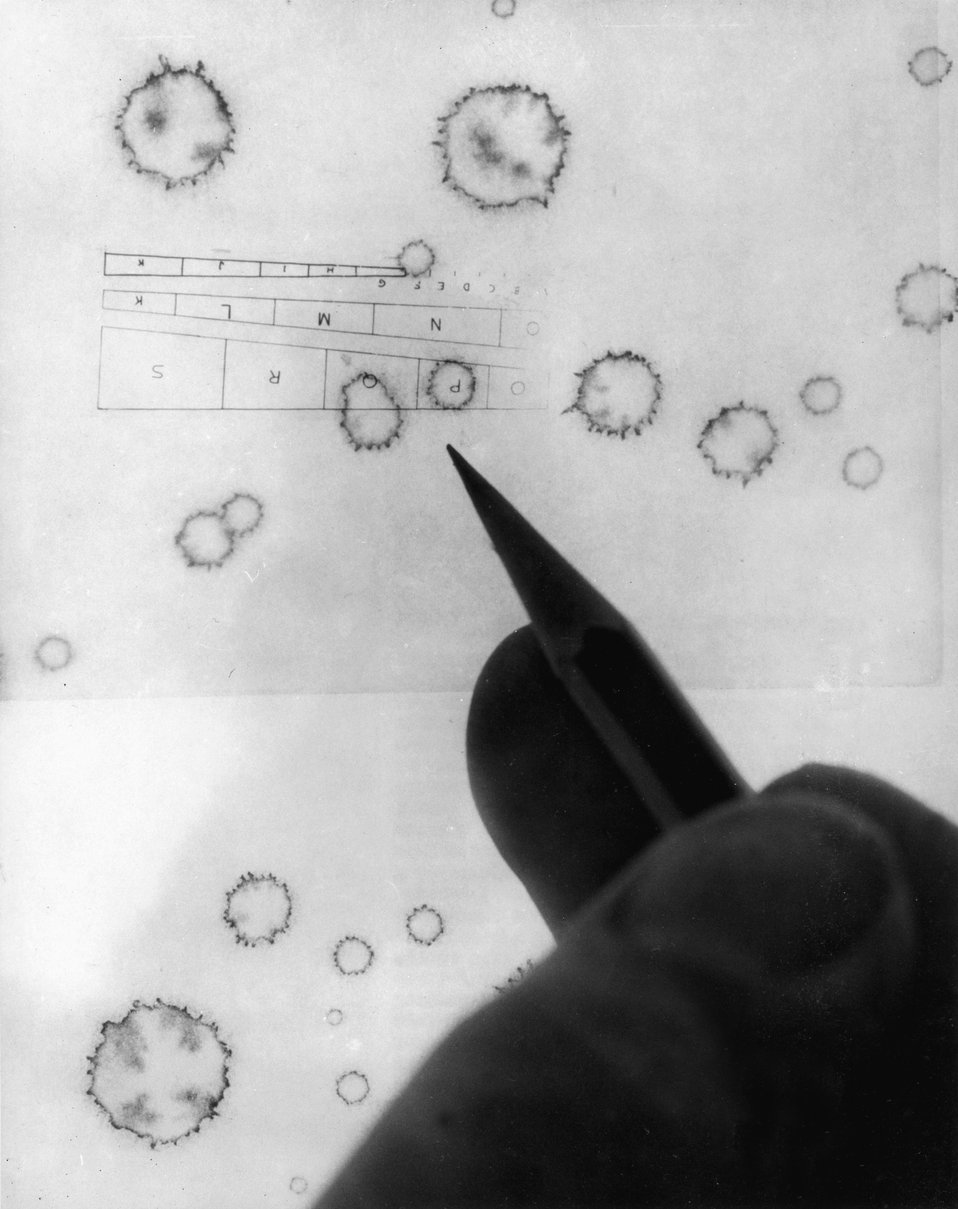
The sizes of raindrops have been measured since 1900 by means of the spots left on water-sensitive paper. c. 1968